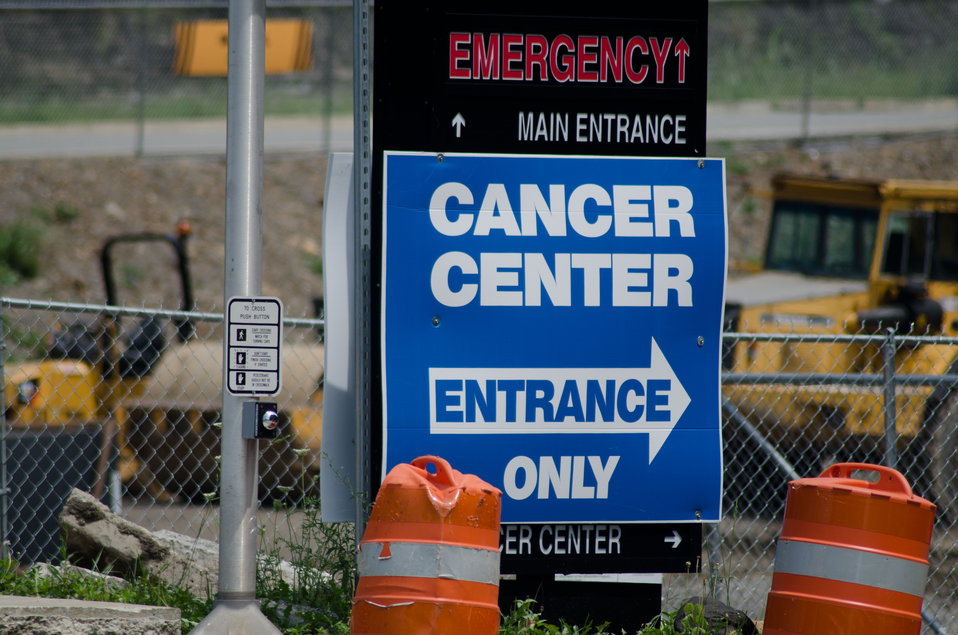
Detour, arrow, construction and temporary signs are posted on and across the re-utilized buildings and properties at various ends of multiple parking lots are common sights at the Pikeville Medical Center on Tuesday, July 12, 2011, in Pikeville, KY. Nearby, the above ground construction phase of Pikeville Medical Center (PMC) expansion project is underway, after months of infrastructure construction and rain delays. This is one of Kentucky’s largest American Recovery and Reinvestment Act (ARRA) projects. The $44.6 million Community Facilities Loan will finance construction of a new medical office building and parking garage.